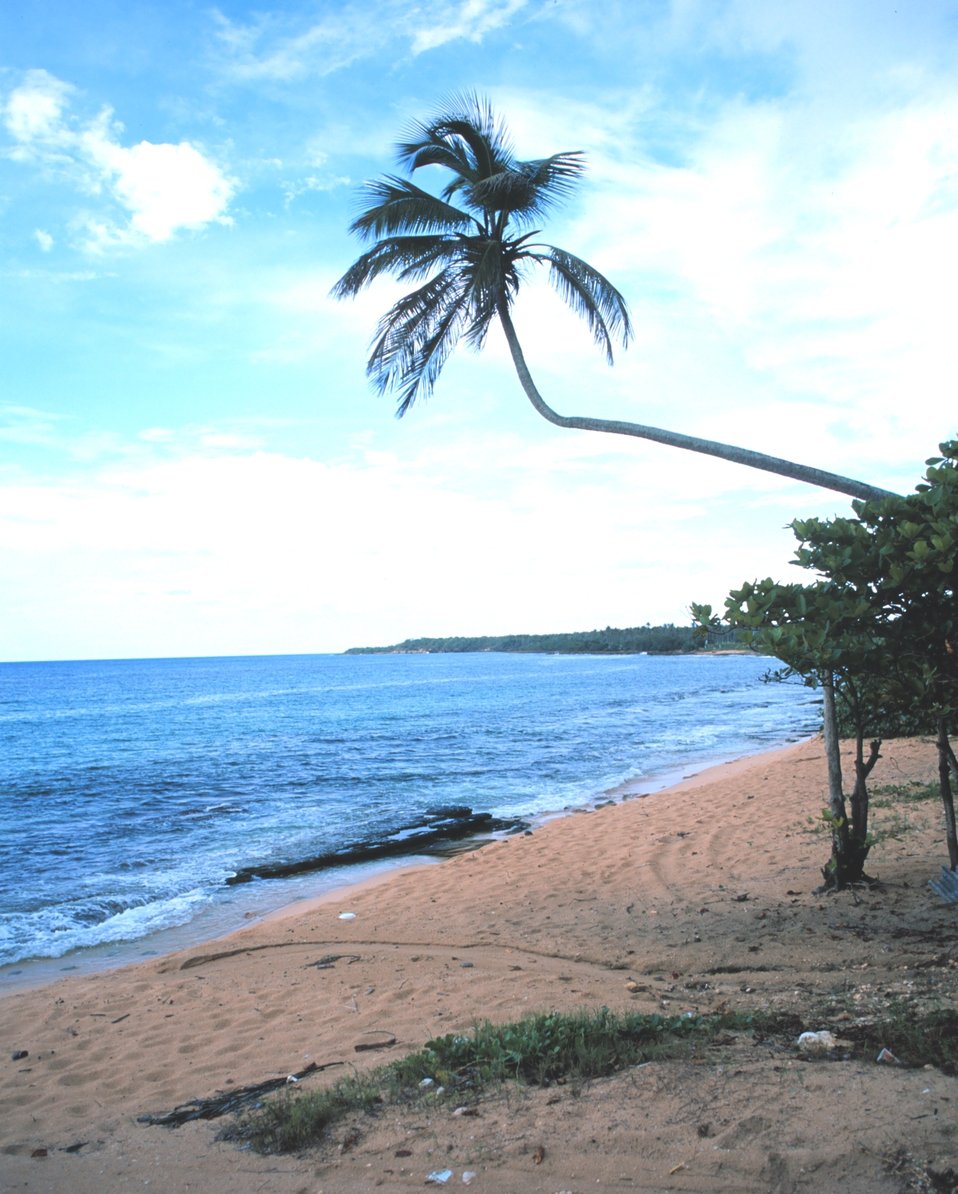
Beach near Puerto Nuevo